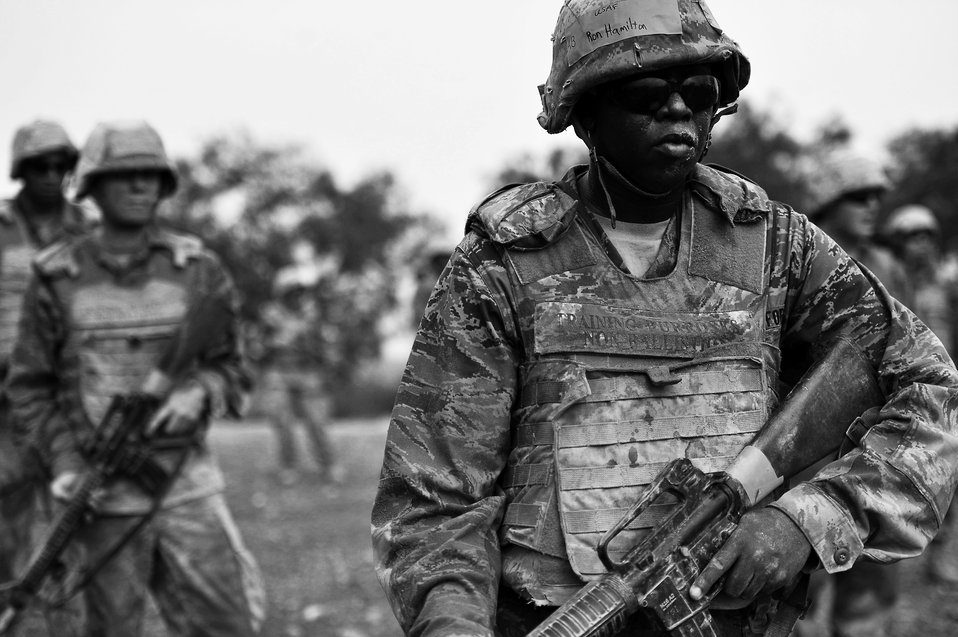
BEAST

Basic trainees go through their sixth week of Air Force basic military training at the Basic Expeditionary Airman Skills Training on May 25, 2011, at Lackland Air Force Base, Texas.